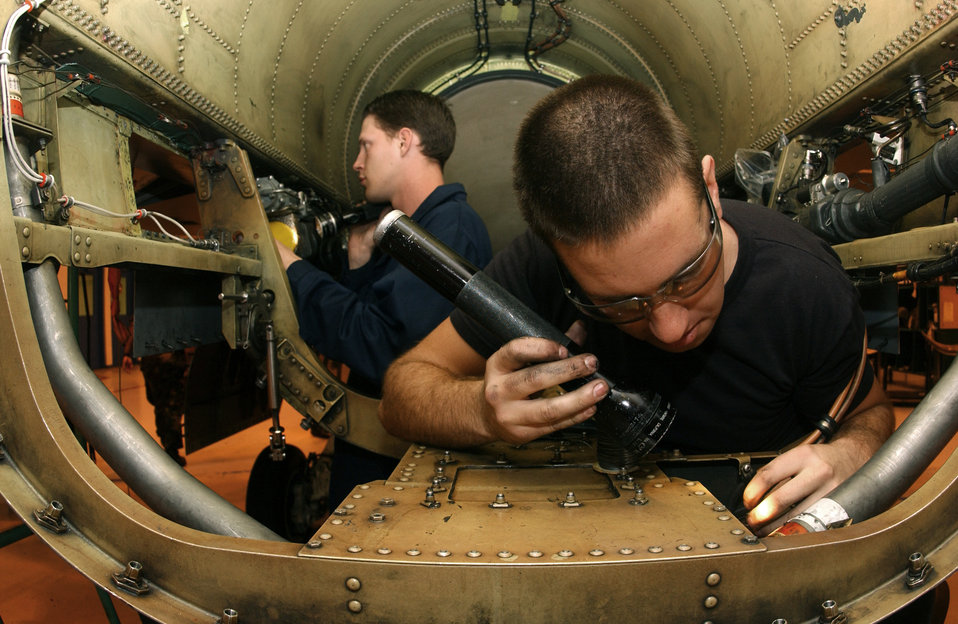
Getting ready for QA

LUKE AIR FORCE BASE, Ariz. -- Airman Paul Lessard (foreground) and Airman 1st Class Barry Thomas check for any damaged or missing clamps before a quality assurance inspection here recently. Both Airmen are F-16 crew chiefs assigned to the 56th Equipment Maintenance Squadron.